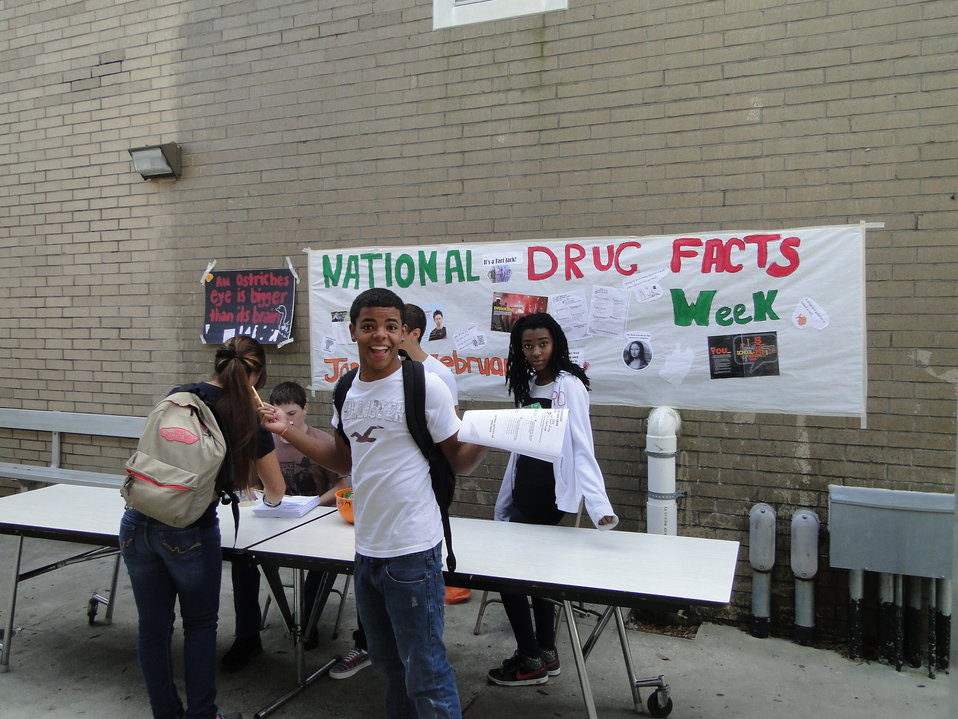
Sebring High School